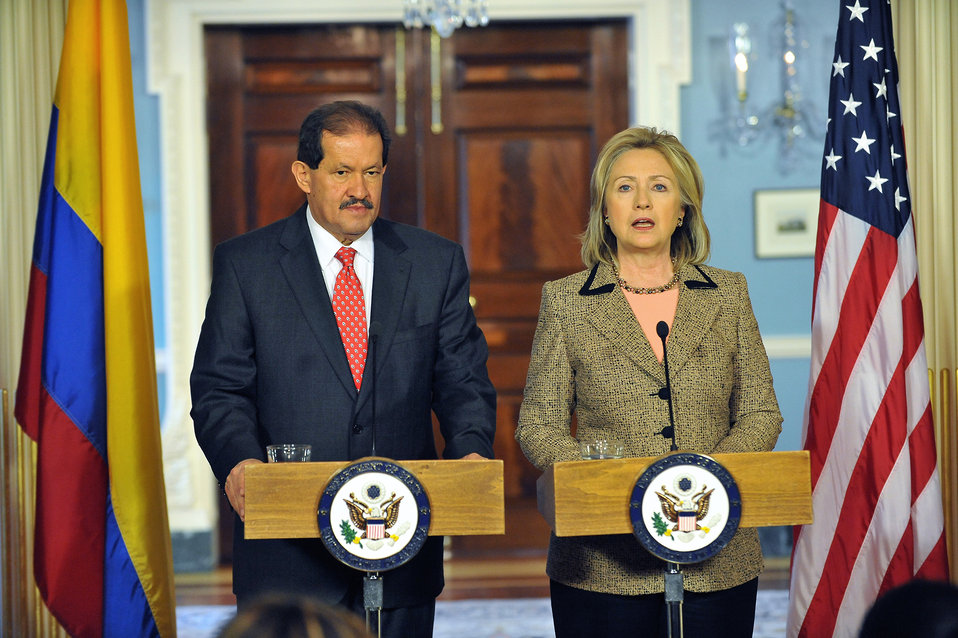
Secretary Clinton and Colombian Vice President Garzon Hold a Joint Press Conference

U.S. Secretary of State Hillary Rodham Clinton and Colombian Vice President Angelino Garzon hold a joint press conference after their bilateral meeting at the U.S. Department of State in Washington, D.C., on January 28, 2011.